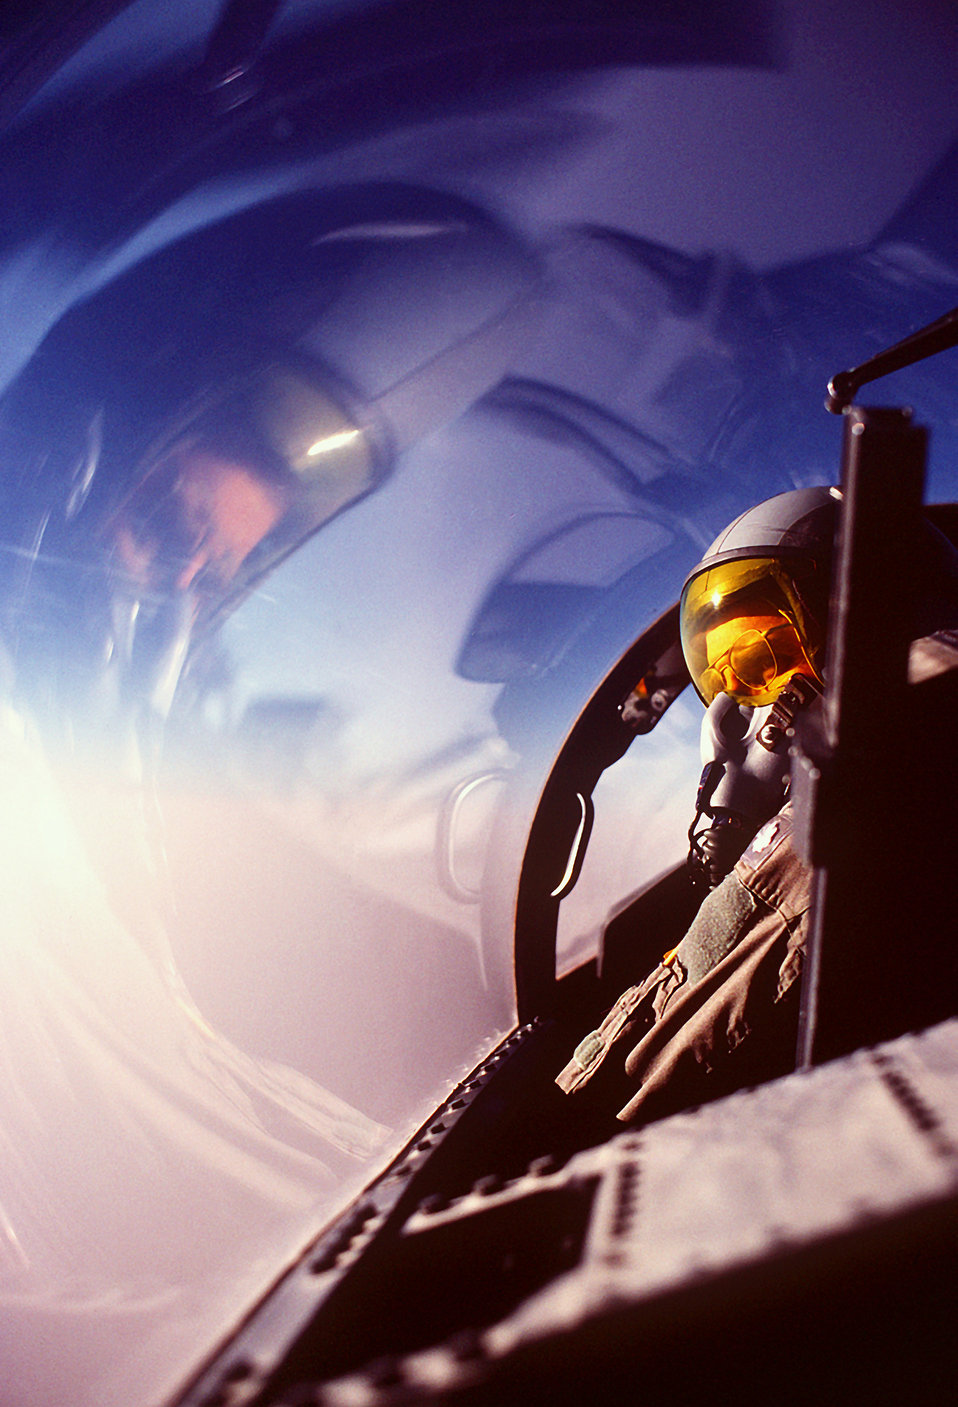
F-15D Eagle

1990's -- Lt. Col. George Wagasky of the 1st Tactical Fighter Wing scans the horizon from the cockpit of his F-15D Eagle aircraft while on a combat patrol near the Iraqi border during Operation Desert Shield.